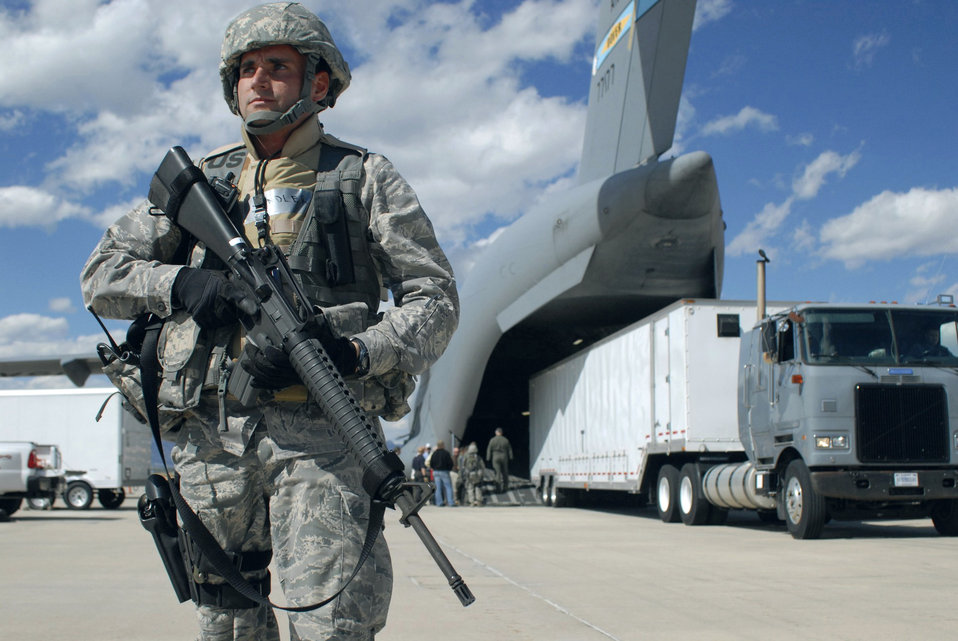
This line is secure

Capt. James Spindler secures the perimeter as equipment is loaded into a C-17 Globemaster III at Peterson Air Force Base, Colo., Oct.5, 2010. Captain Spindler is the mobile operation unit director of operations for the 4th Space Operations Squadron.